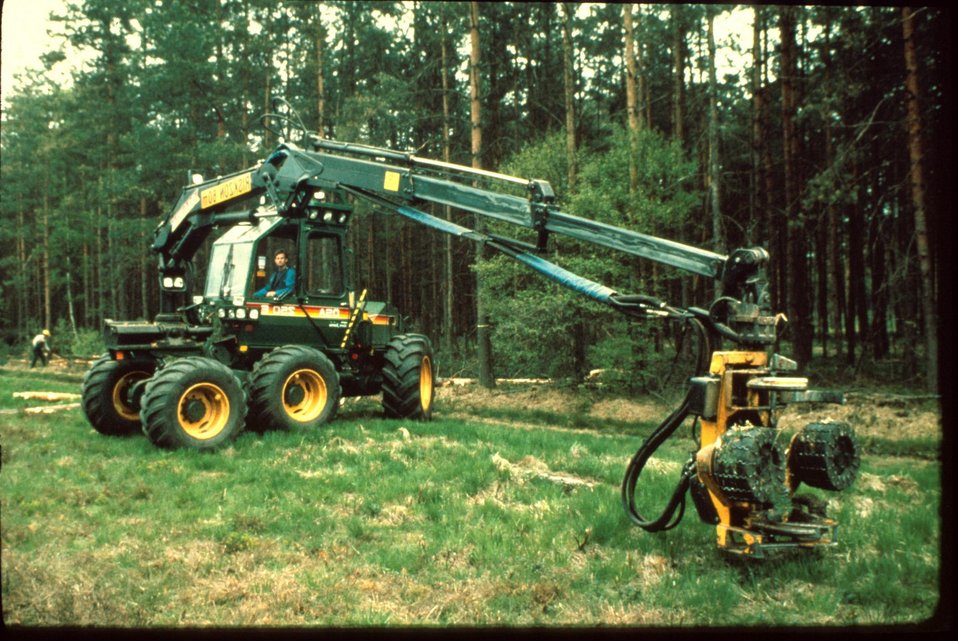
Slashbuster Upper Snake River District